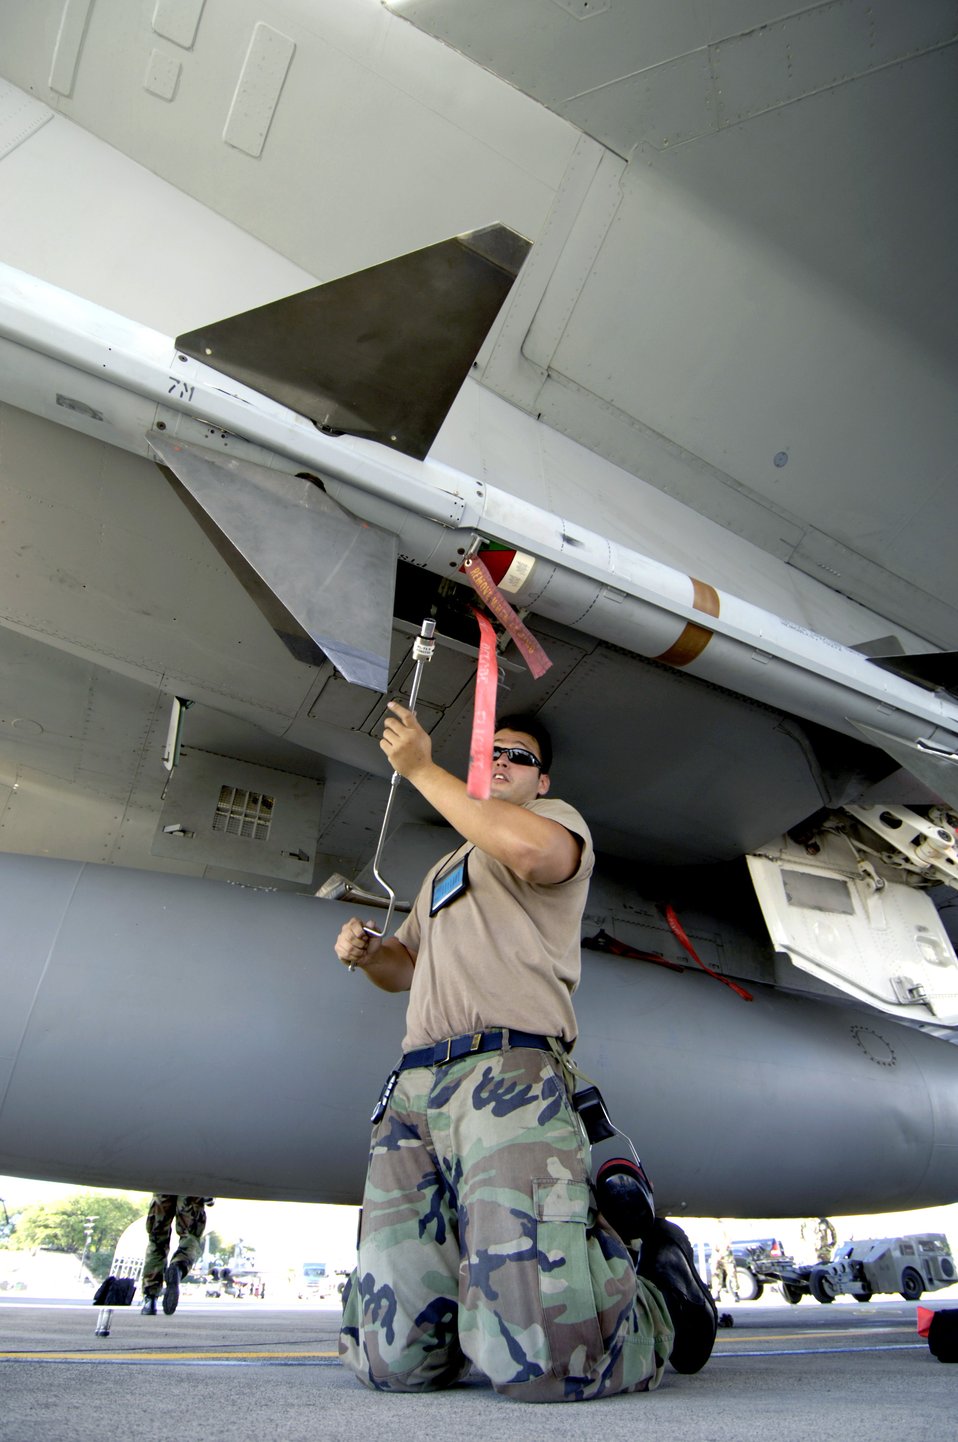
Total force at work in RIMPAC

Staff Sgt. Gabriel Coronado loads an AIM-7 Sparrow missile on an F-15 Eagle at Hickam Air Force Base, Hawaii, on July 16 during the Rim of the Pacific Exercise 2006. Sergeant Coronado is with the Hawaii Air National Guard's 154th Aircraft Maintenance Squadron.